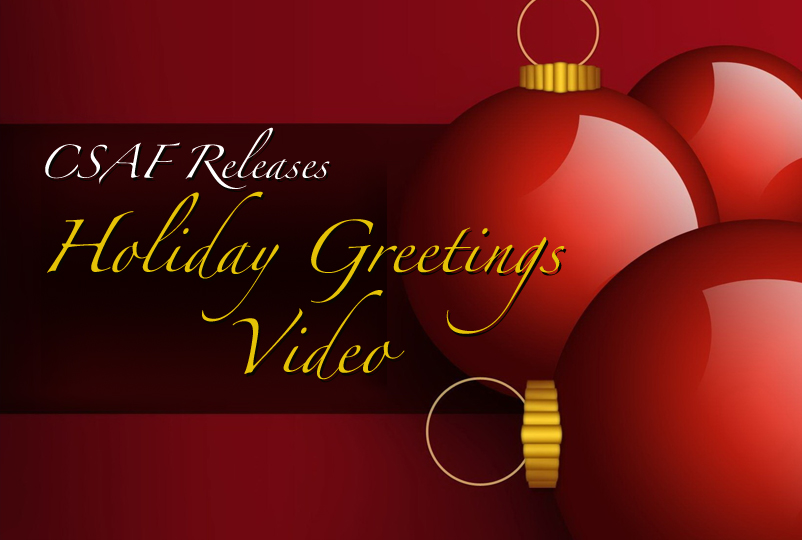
CSAF Releases Holiday Greetings Video